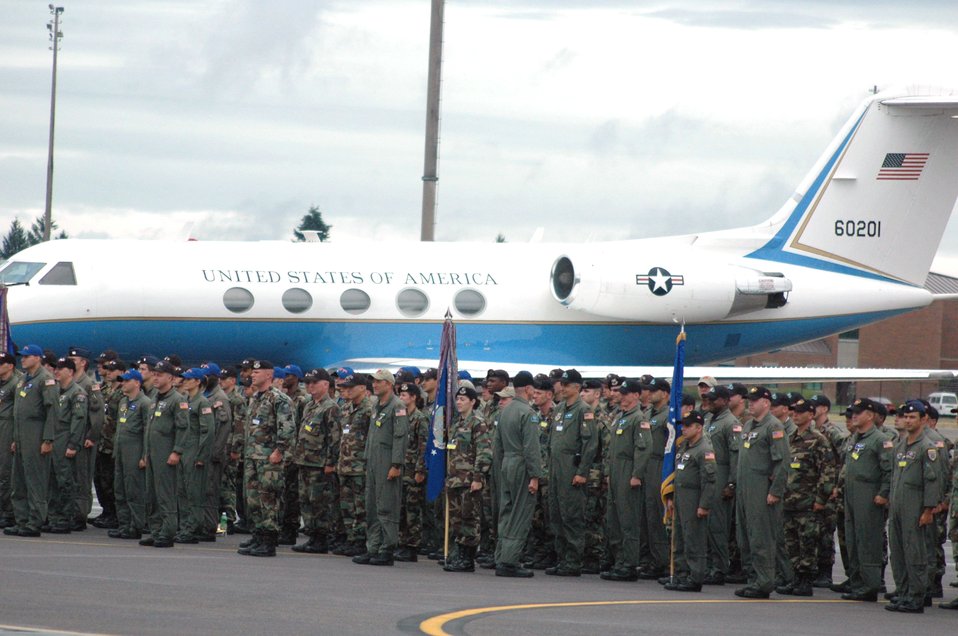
Opening ceremonies mark official start for Air Mobility Rodeo 2007

Teams for Air Mobility Rodeo 2007 stand in formation during the opening ceremony July 22 at McChord Air Force Base, Wash. Rodeo, sponsored by Air Mobility Command, is a readiness competition for U.S. and international mobility air forces.